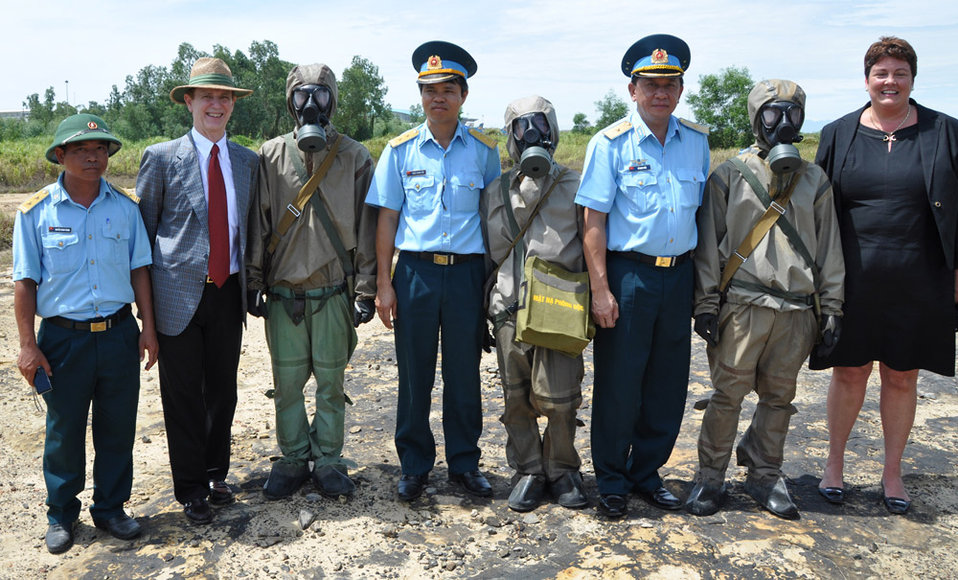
Vietnamese and U.S. officials collaborate at Danang Airport.